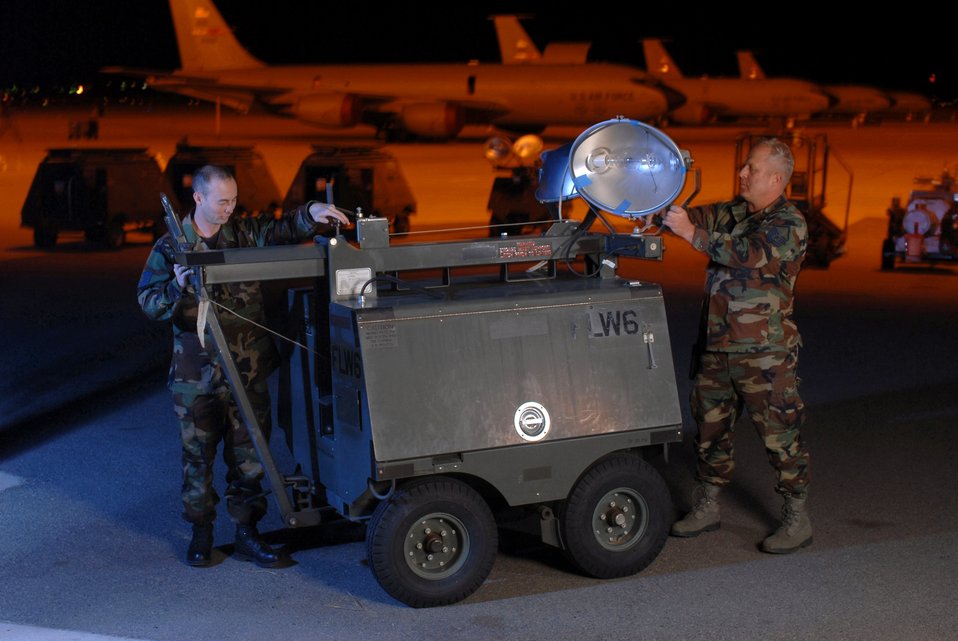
Let there be light

Tech. Sgt. Tom Wilson (left) and Master Sgt. Tom Maple inspect lighting equipment used for nighttime flightline operations. Both are aircraft generation equipment technicians from the 452nd Maintenance Squadron at March Air Reserve Base, Calif.